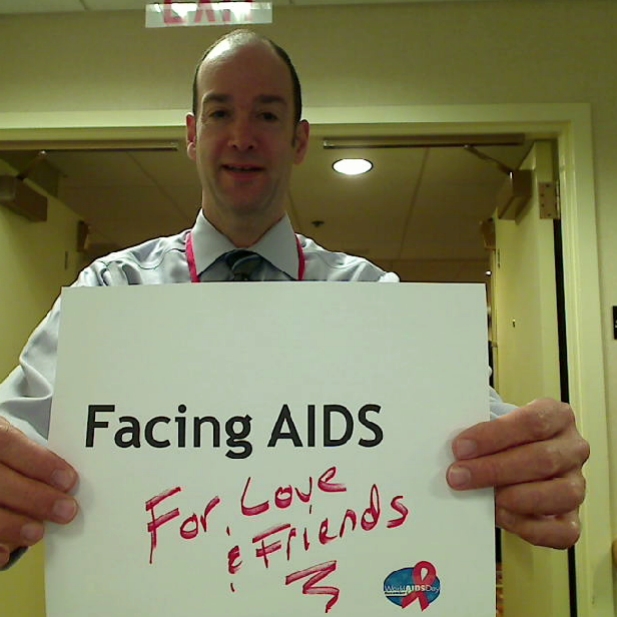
Facing AIDS For Love and Friends!